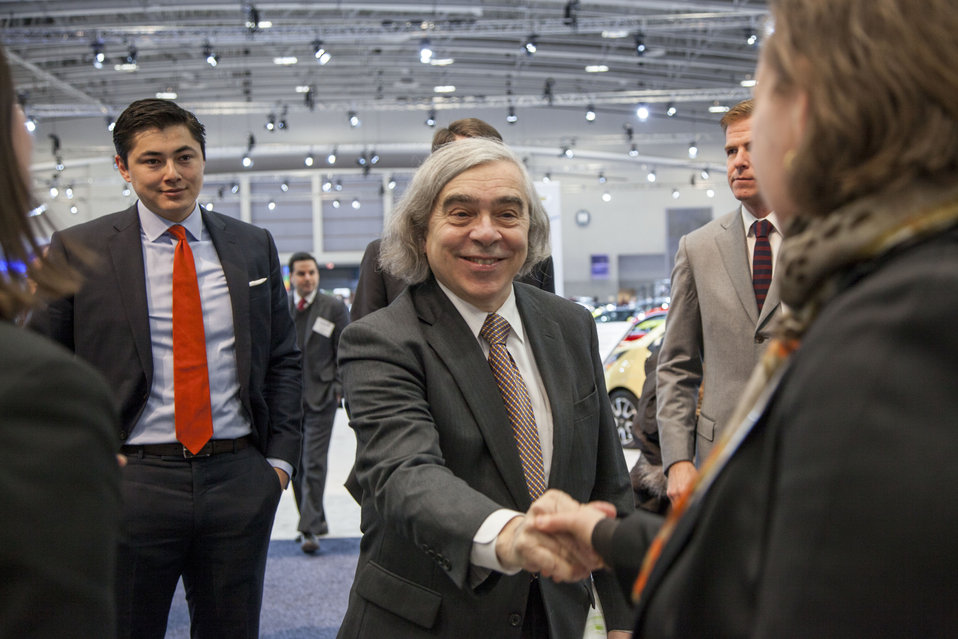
Secretary Moniz visited the 2014 Washington Auto Show and met with automakers to learn how they are building on the Energy Department’s vehicle and fuel cell research to develop more efficient conventional vehicles and ones that run on alternative fuels.